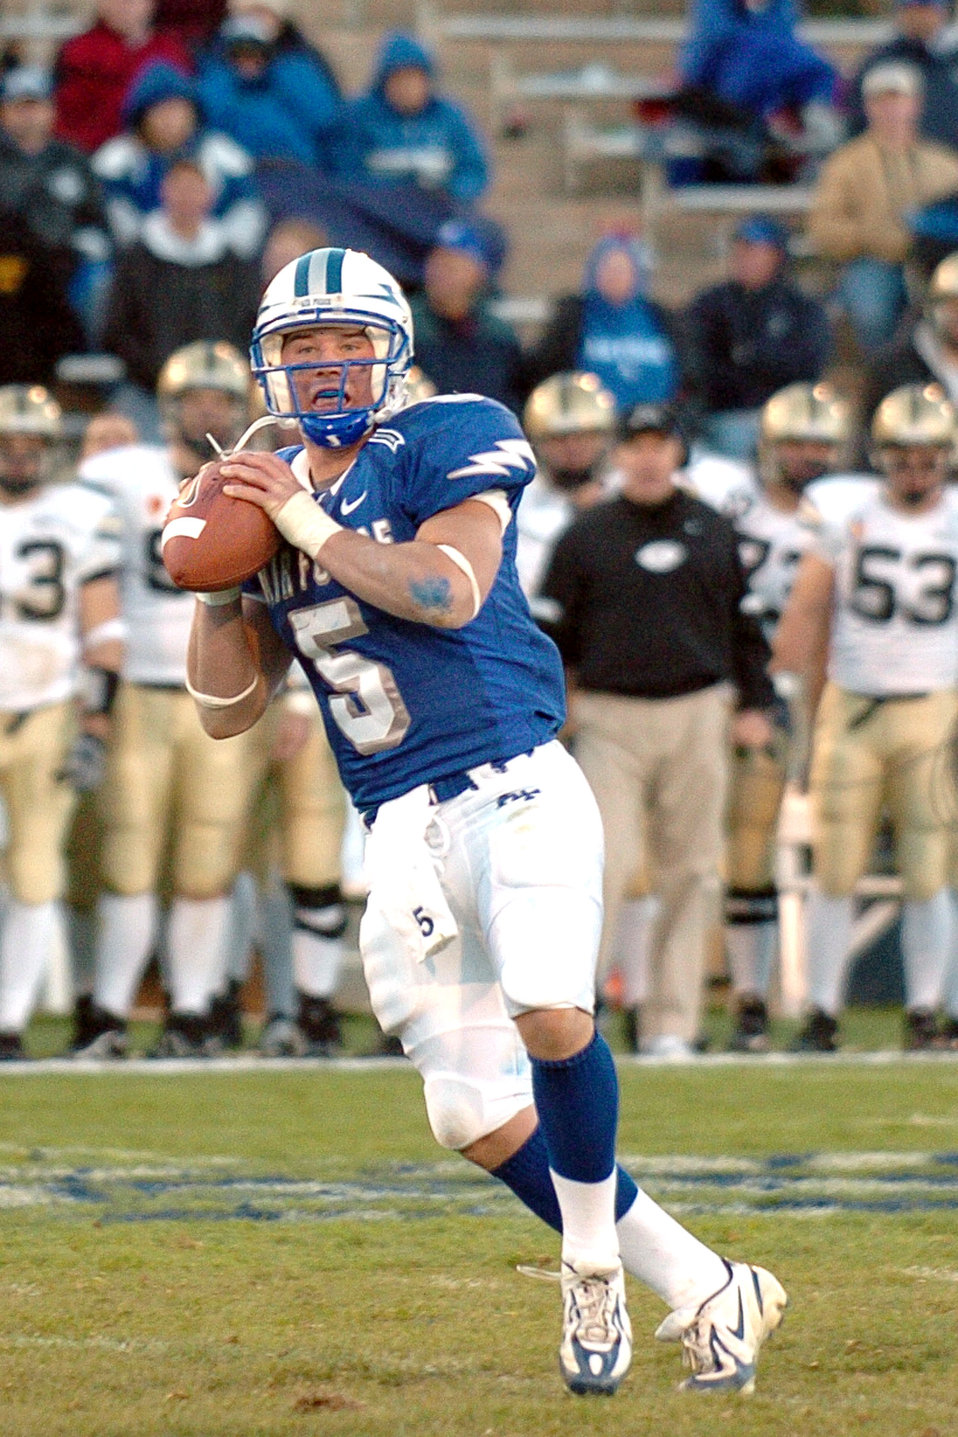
Falcons eye 'Return to Dominance'

Air Force junior quarterback Shuan Carney drops back to pass last year against Army. The North Olmstead, Ohio, native joins seniors Gilberto Perez, Chris Sutton and Curtis Grantham as team captains for the 2006 Falcons.